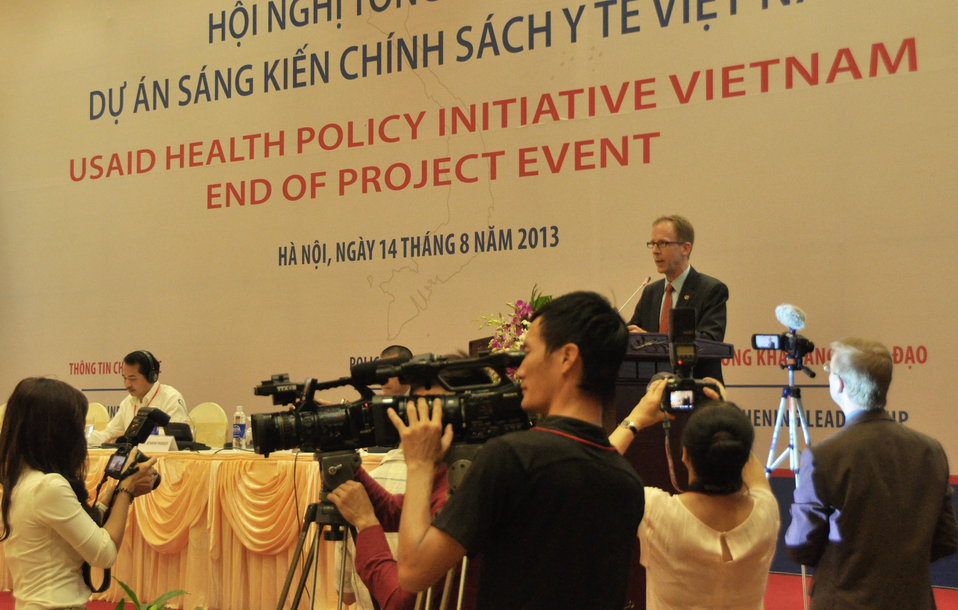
USAID Health Policy Initiative End of Project Workshop

Hanoi, August 14, 2013.